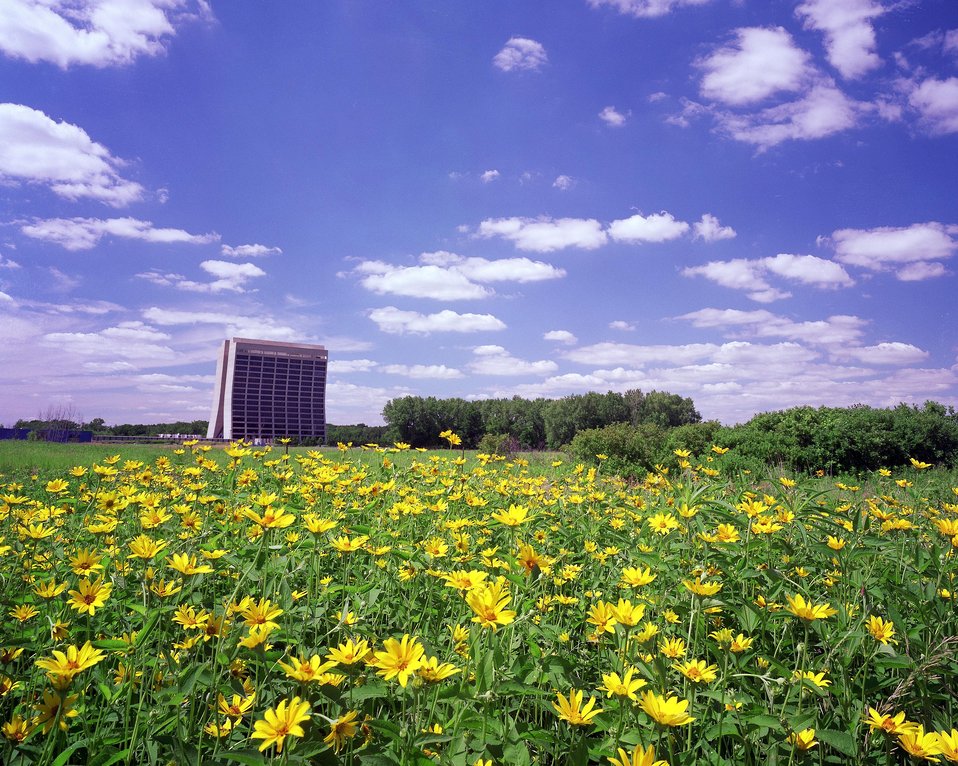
PRAIRIE PLANTS AND FLOWERS AT FERMILAB WITH WILSON HALL IN THE BACKGROUND.

THE FERMI NATIONAL ACCELERATOR LABORATORY PRESERVES AND ENCOURAGES ITS PRAIRIE HERITAGE. FERMILAB ADVANCES THE UNDERSTANDING OF THE FUNDAMENTAL NATURE OF MATTER AND ENERGY BY PROVIDING LEADERSHIP AND RESOURCES FOR QUALIFIED RESEARCHERS TO CONDUCT BASIC RESEARCH AT THE FRONTIERS OF HIGH ENERGY PHYSICS AND RELATED DISCIPLINES.